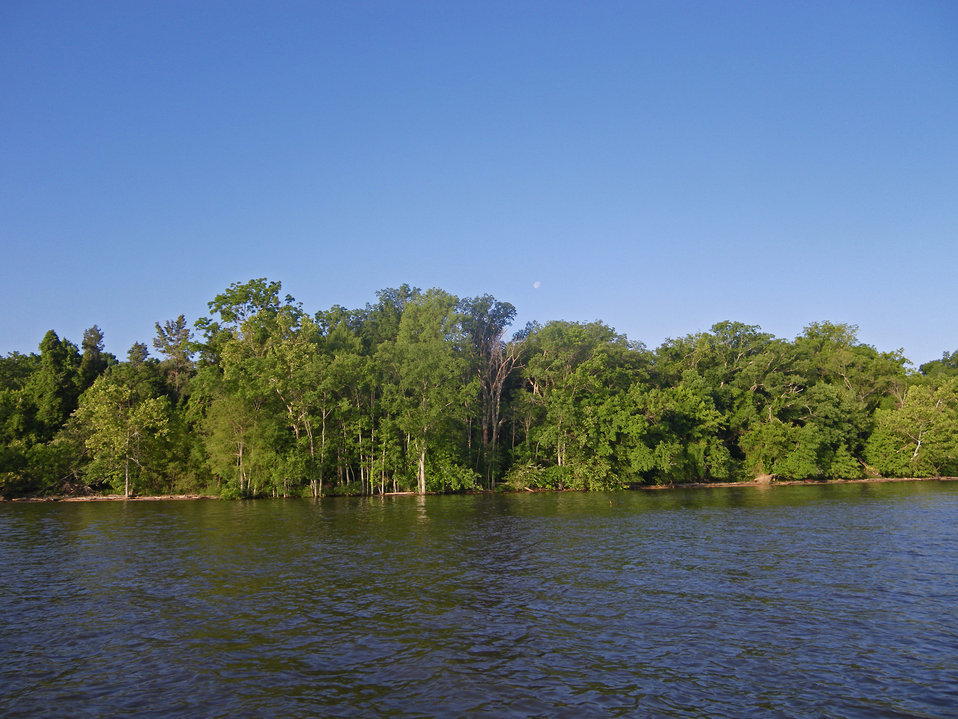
James River National Wildlife Refuge, VA.